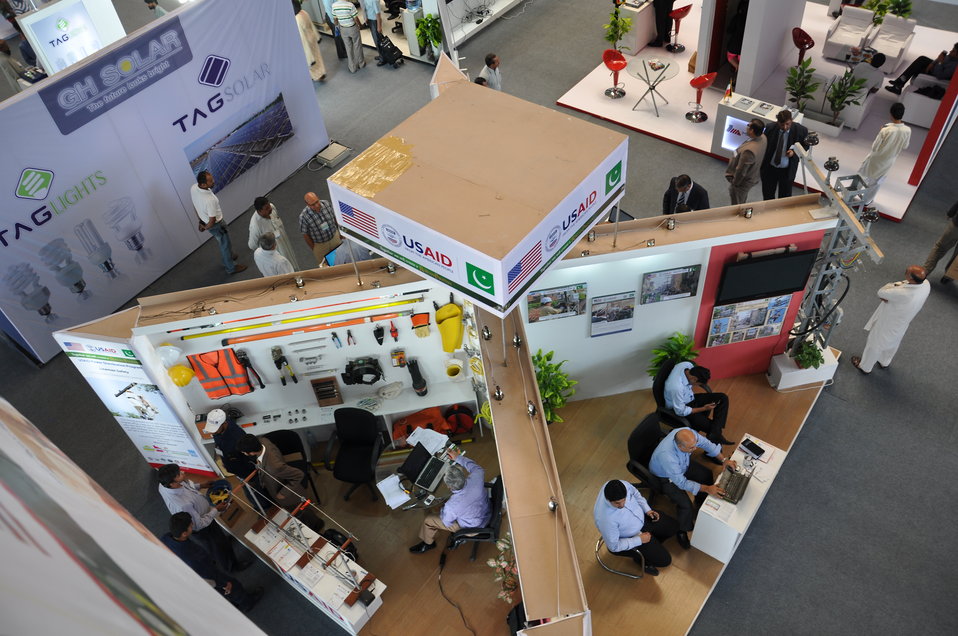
USAID participates in 11th International Pakistan Oil Gas Energy Exhibition